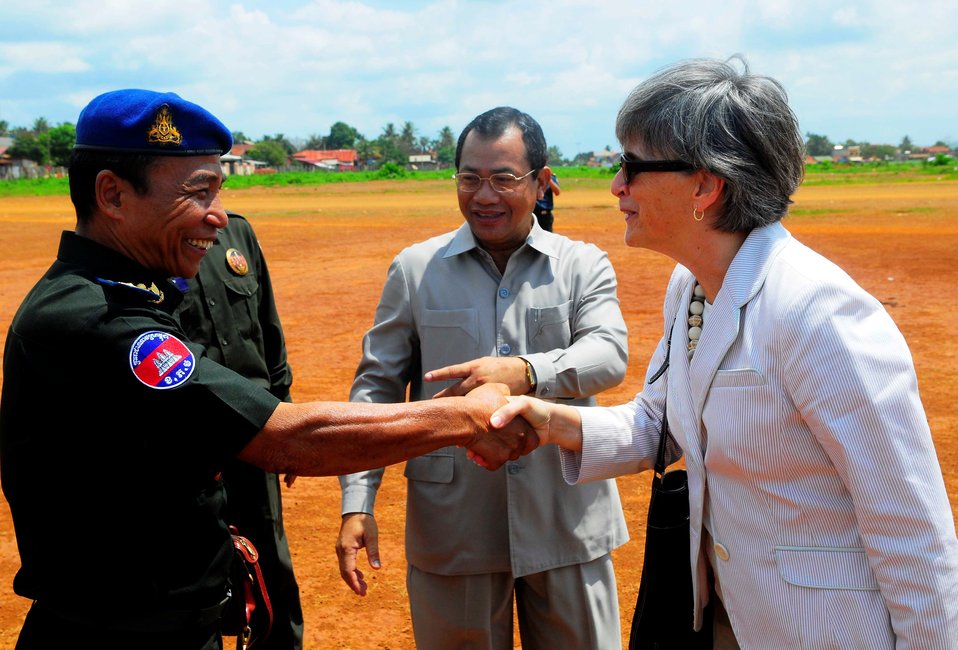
Ambassador Rodley Greets a Cambodian Military Official

U.S. Ambassador to Cambodia Carol Rodley greets a Cambodian military official during her visit to a USNS Mercy (T-AH 19) medical civic action program at the Veun Sai Health Center in Rattanakiri, Cambodia, in support of Pacific Partnership 2010, on June 18, 2010.